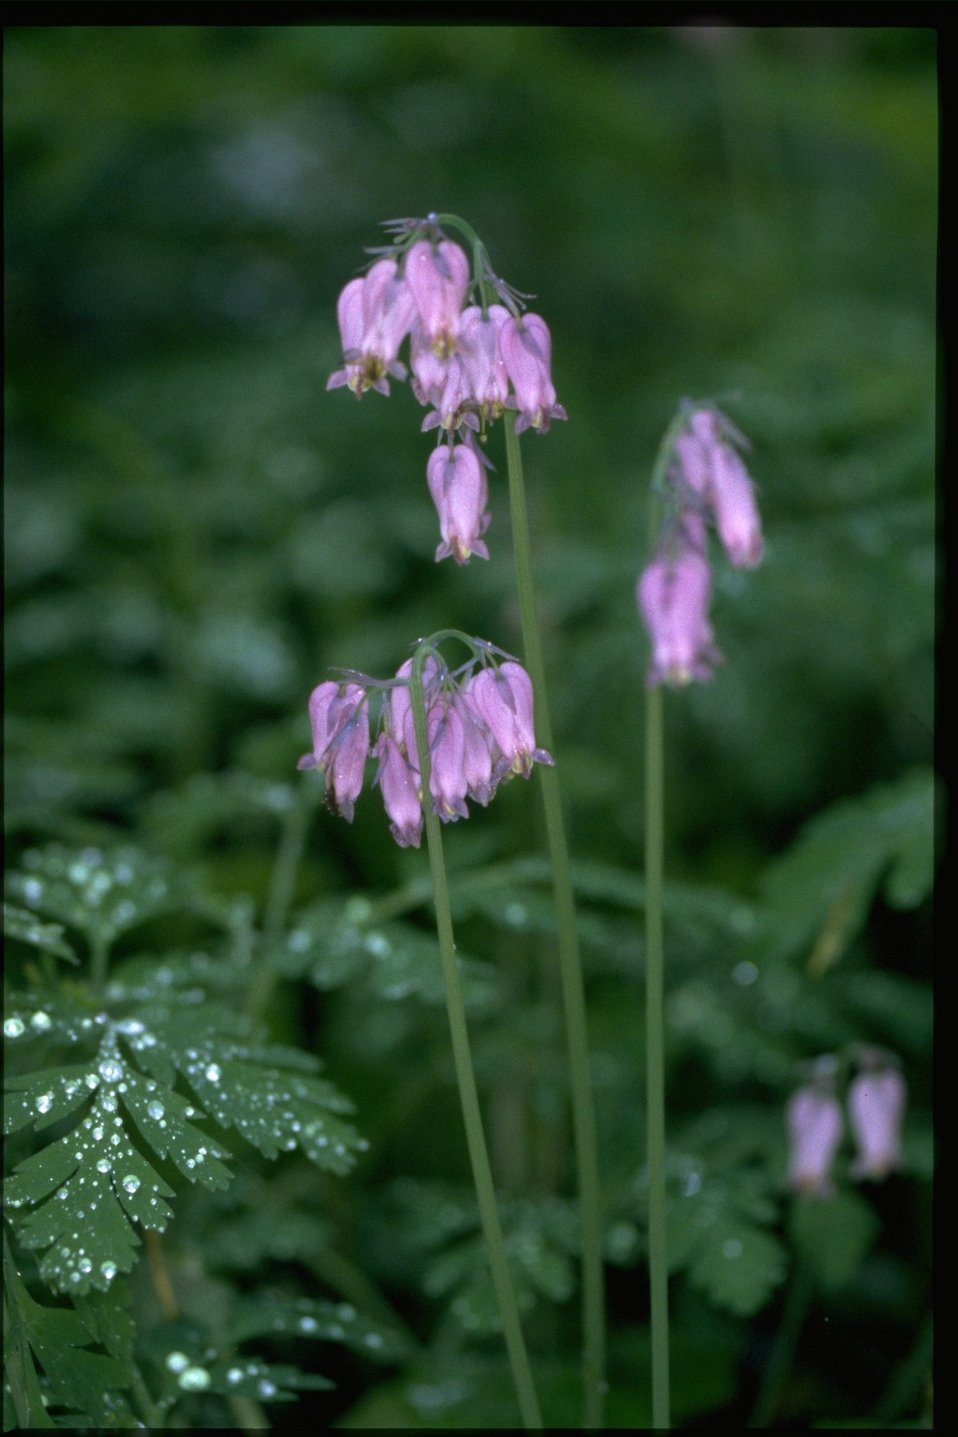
Closeup shot of Pacific Bleeding Heart wildflowers (Dicentra formosa).